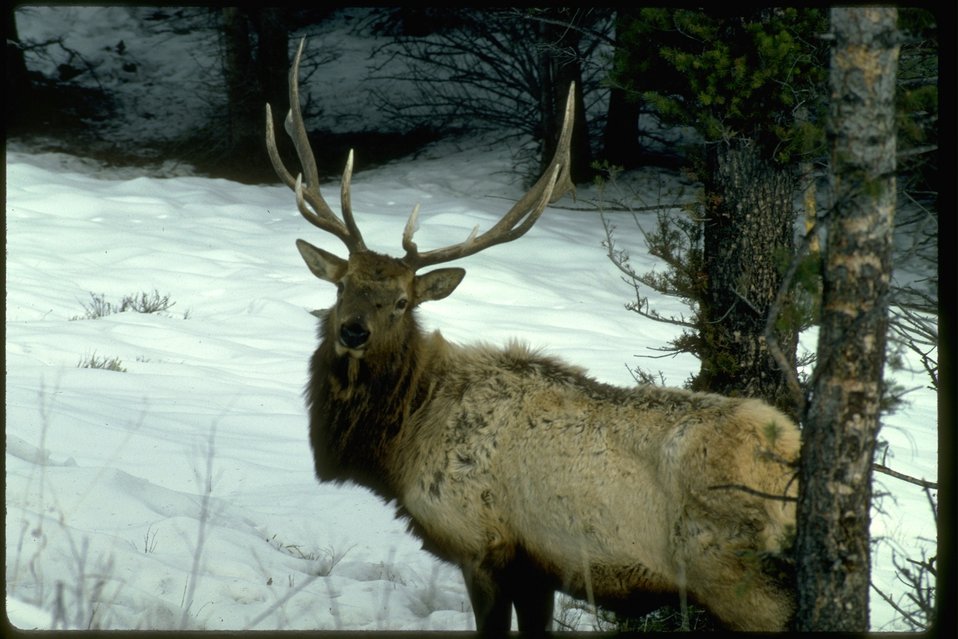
Bull Elk standing in the snow.